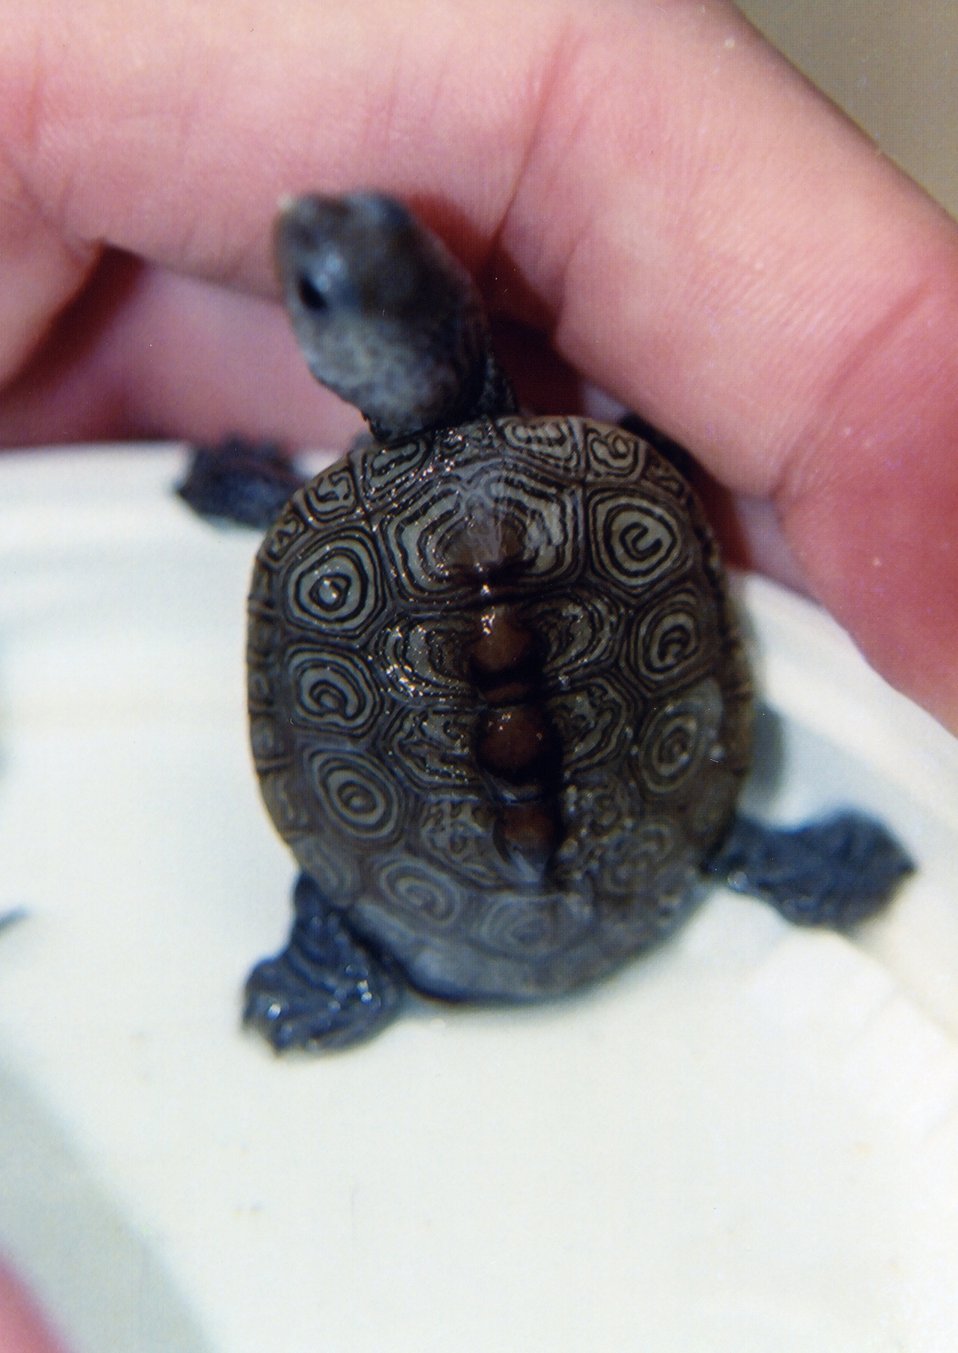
Diamondback terrapin hatchling with typical shell markings.